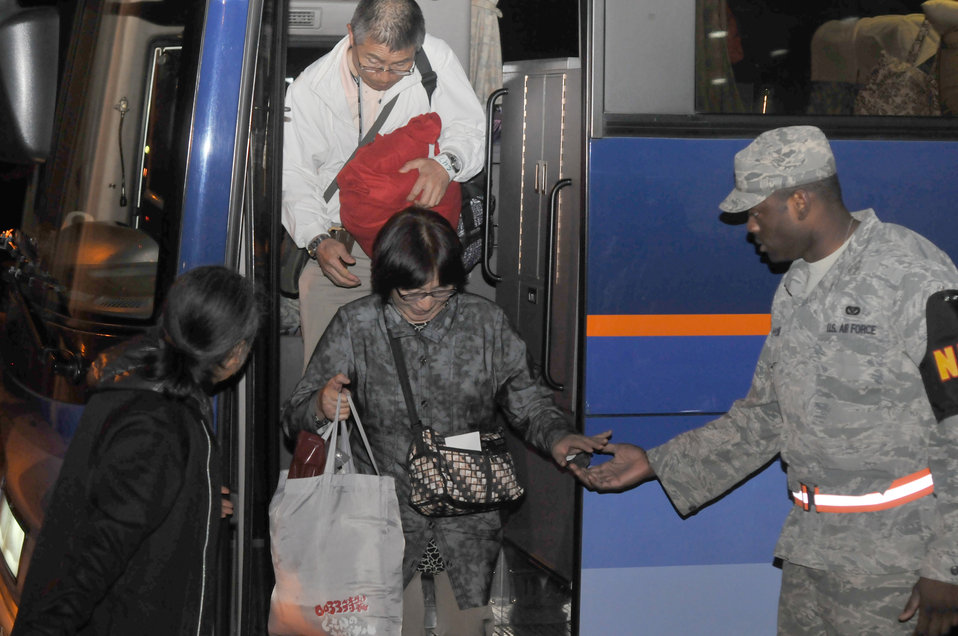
Taking shelter

Suzuki Hideto (back) and Staff Sgt. Jason Holmes assist a passenger exiting a bus March 11, 2011, at Yokota Air Base, Japan. The passengers arrived at the base after their commercial flights were diverted from Narita International Airport in Tokyo, due to an 8.9 magnitude earthquake. Mr. Suzuki is a recreational specialist assigned to the 374th Force Support Squadron. Sergeant Holmes is assigned to the 374th Civil Engineer Squadron.